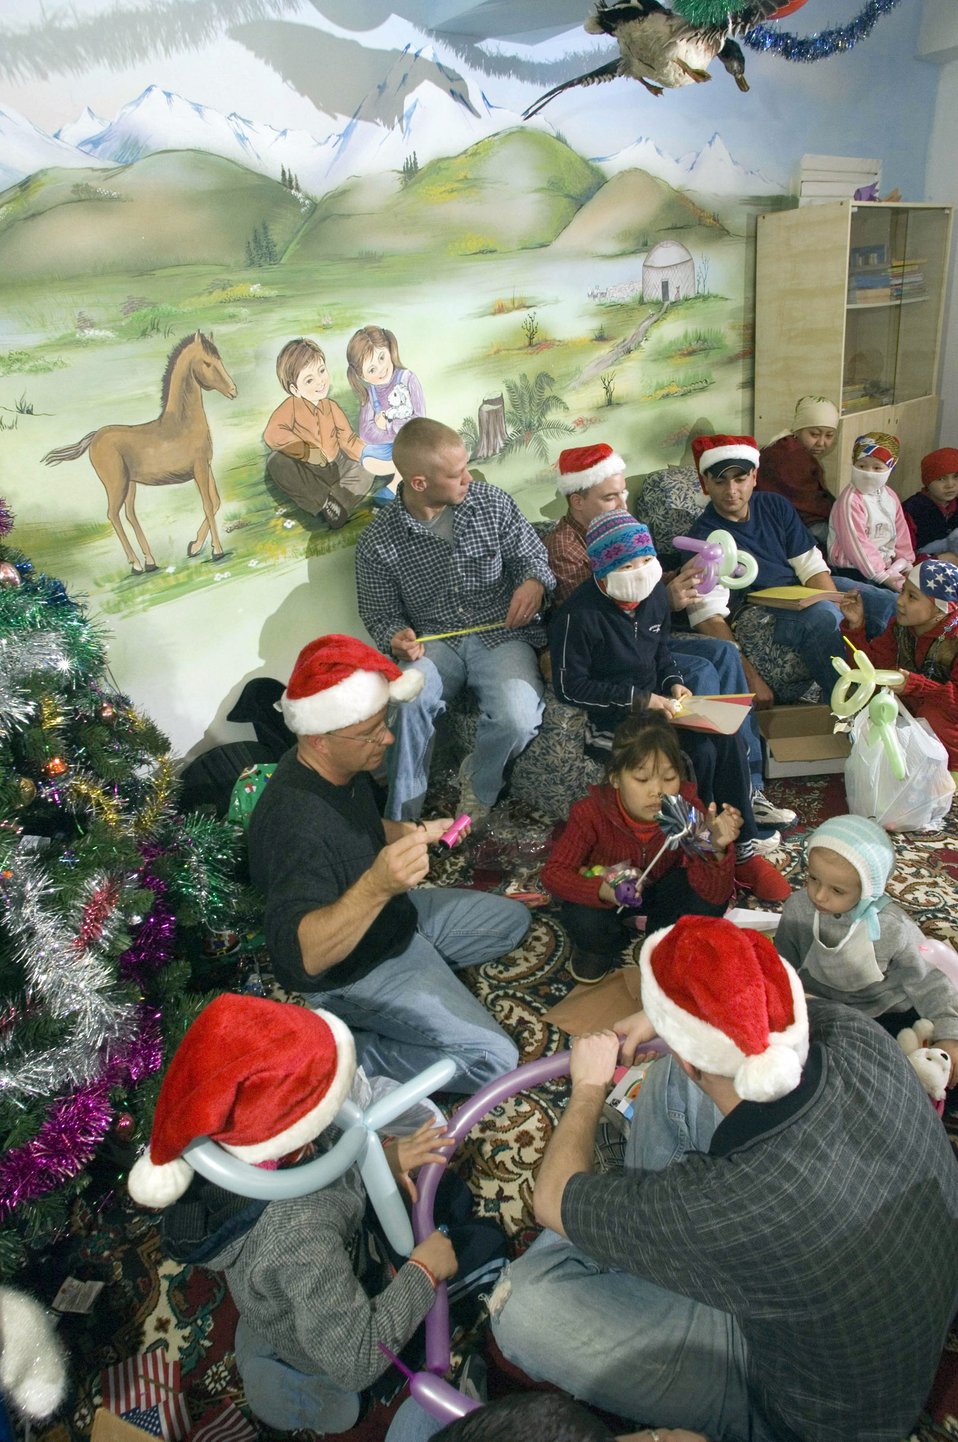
Manas Christmas

BISHKEK, Kyrgyzstan -- Airmen from nearby Manas Air Base share holiday fun with children from a cancer ward here. The Airmen are visiting the hospital as part of the Manas Air Base Outreach Society.